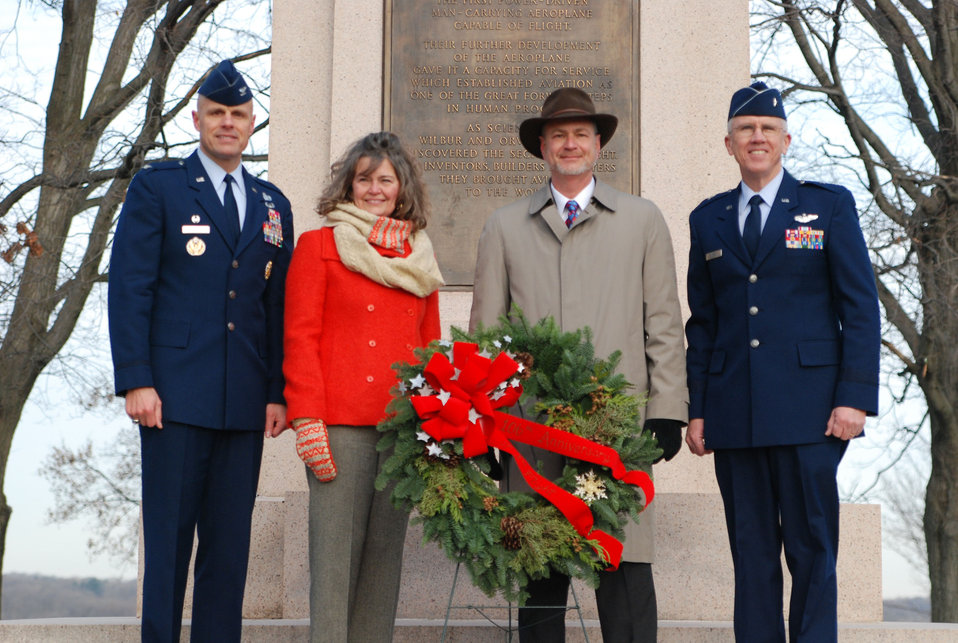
Wright Brothers

Members of the Wright family and Wright-Patterson Air Force Base, Ohio, placed a wreath at the Wright Brothers Memorial Dec. 17, 2009, during a ceremony marking the 106th anniversary of the Wright brothers' first powered flight. Amanda Wright Lane, great grand-niece of the brothers and Stephen Wright, great grand-nephew, pose with Col. Brad Spacy (left) and Brig. Gen. Paul Sampson. Colonel Spacy is 88th Air Base Wing commander and General Sampson is mobilization assistant to the commander of Aeronautical Systems Center.